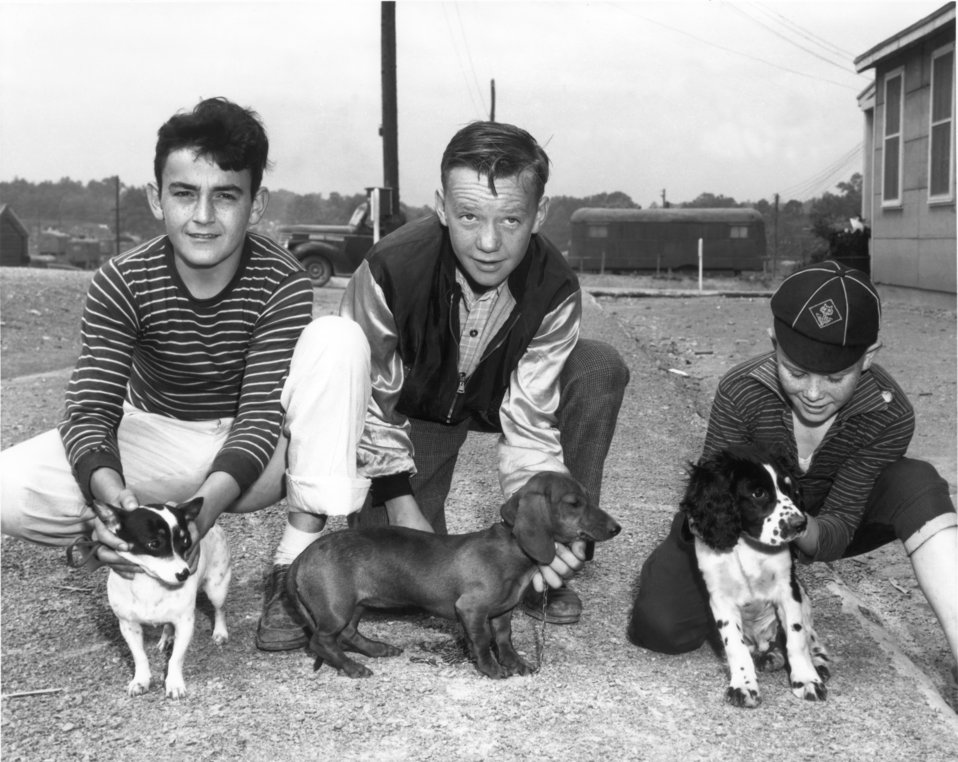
Dog Show Oak Ridge

PRO590-5 DOE photo by Ed Westcott

Dog Show Oak Ridge Tennessee 5/19/45